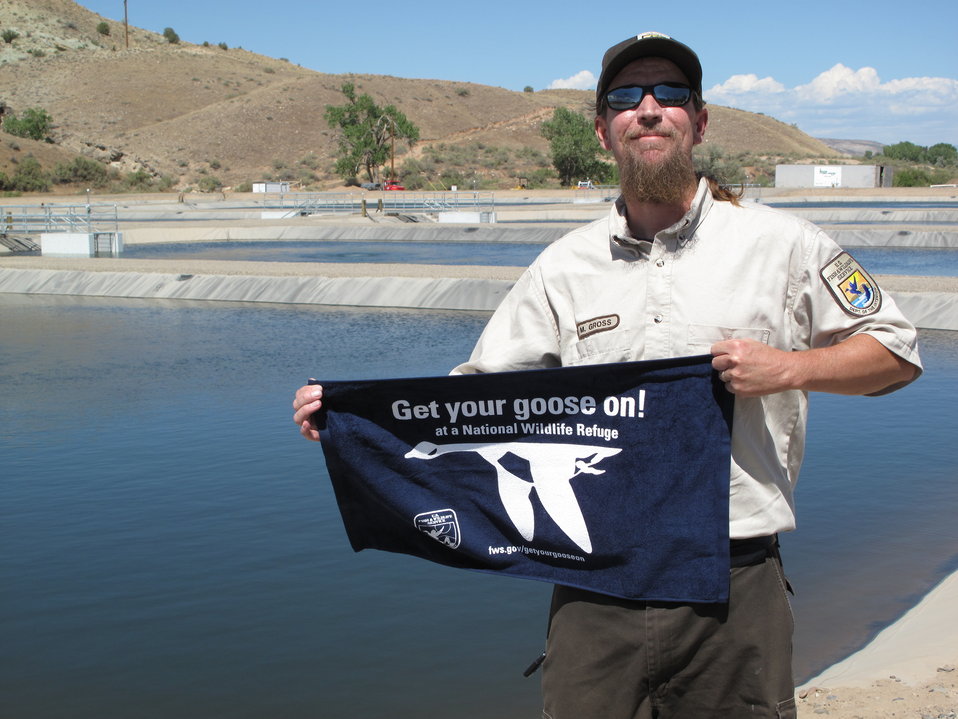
Fish Biologist with Grow-out Ponds

Michael Gross, a fish biologist at the Grand Valley Unit of the Ouray National Fish Hatchery in Grand Junction, displays a “Get your Goose on!” towel in front of grow-out ponds at Horsethief Canyon Native Fish Facility (on.doi.gov/PViVr7) located outside of Fruita, Colo.